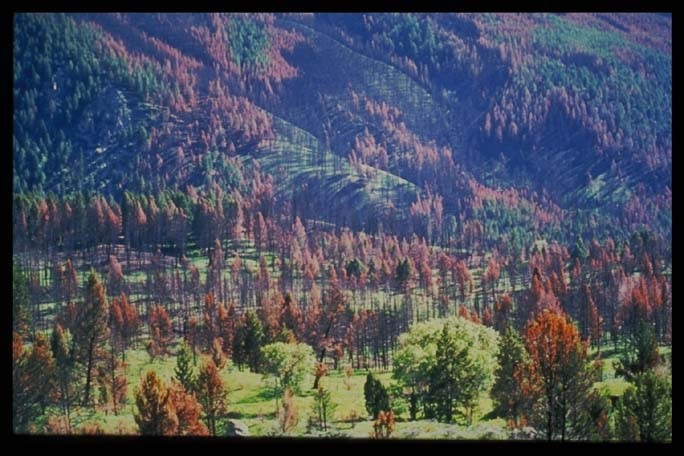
Burned area